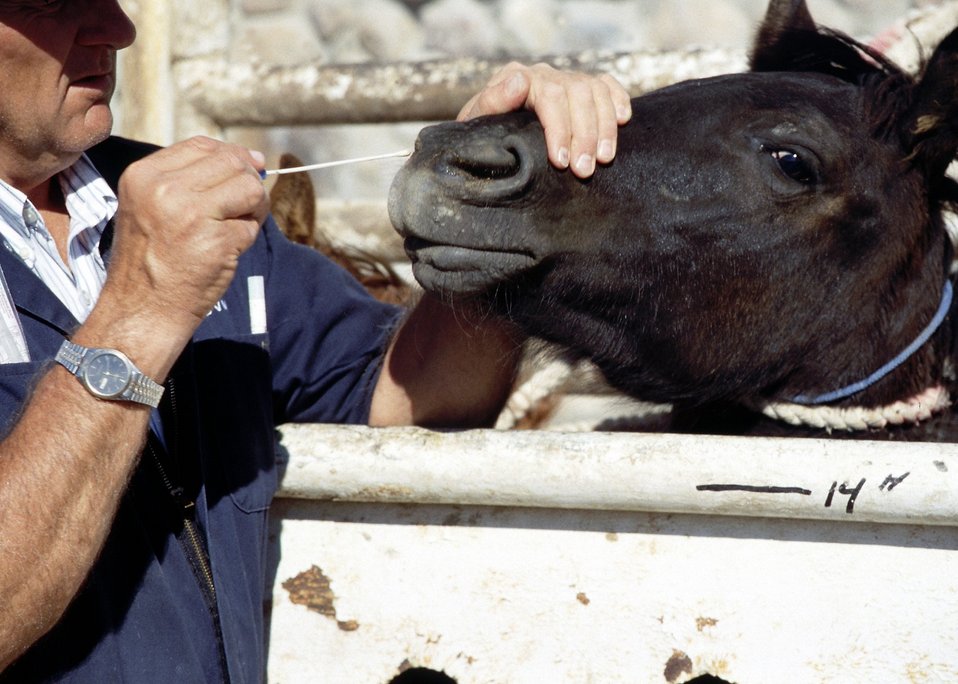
Wild Horse (medical)